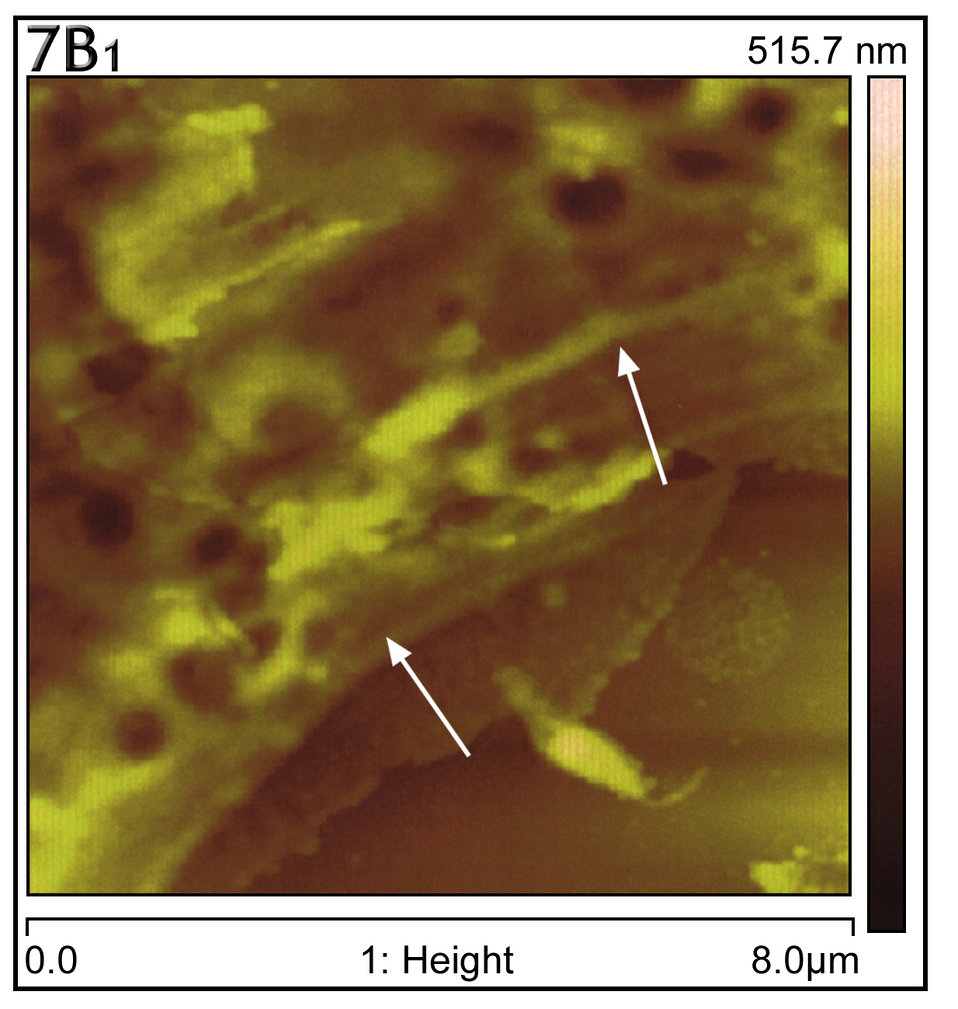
This AFM showed gross thickening of cell cytoplasmic microfilaments just beneath the Vero cell plasma cell membrane (arrows).